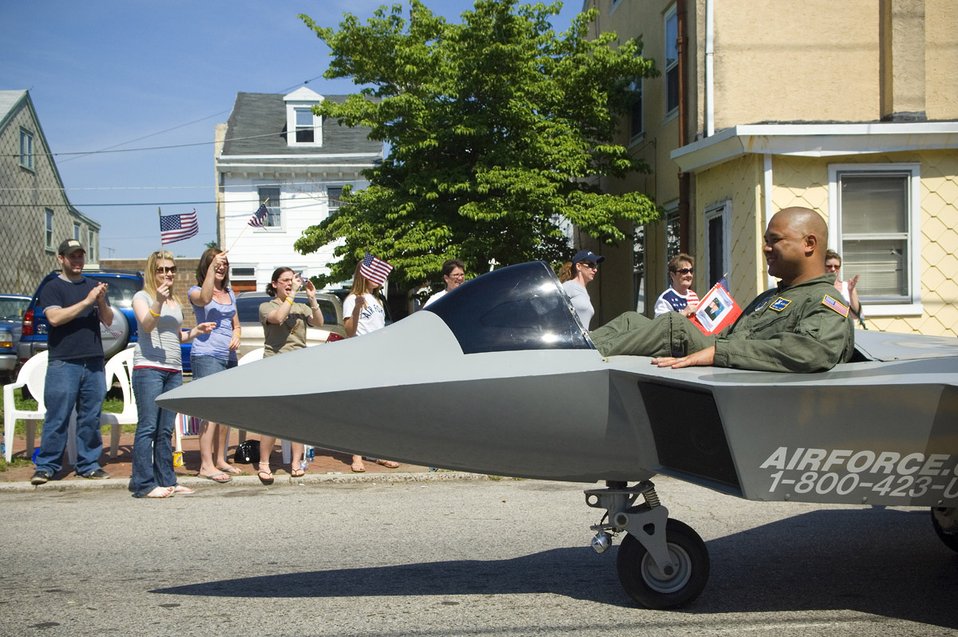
Philly Air Force Week

Staff Sgt. Paul Salter drives a motorized version of the F-22 Raptor during the Bridesburg Memorial Day Parade May 26. Bridesburg is a borough in Philadelphia and hosted the kickoff celebrations for Air Force Week Philadelphia. Air Force Week Philadelphia is an event designed to build new relationships in the Philadelphia metropolitan area and strengthen public support for the Air Force mission and Airmen serving worldwide in the war on terrorism. Sergeant Salter is assigned to the 305th Security Forces Squadron at McGuire Air Force Base, N.J.